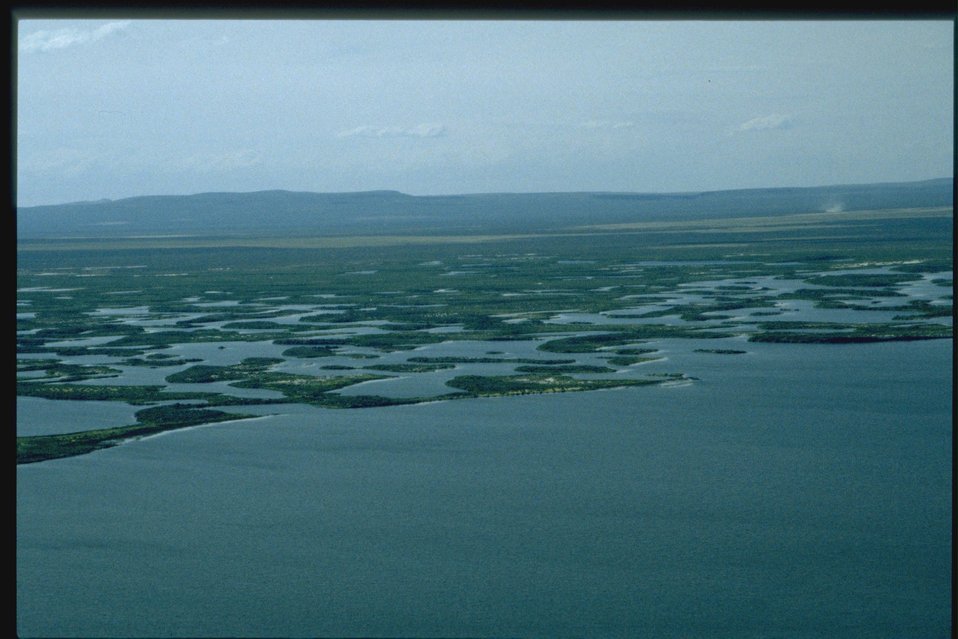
Warner Wetlands.